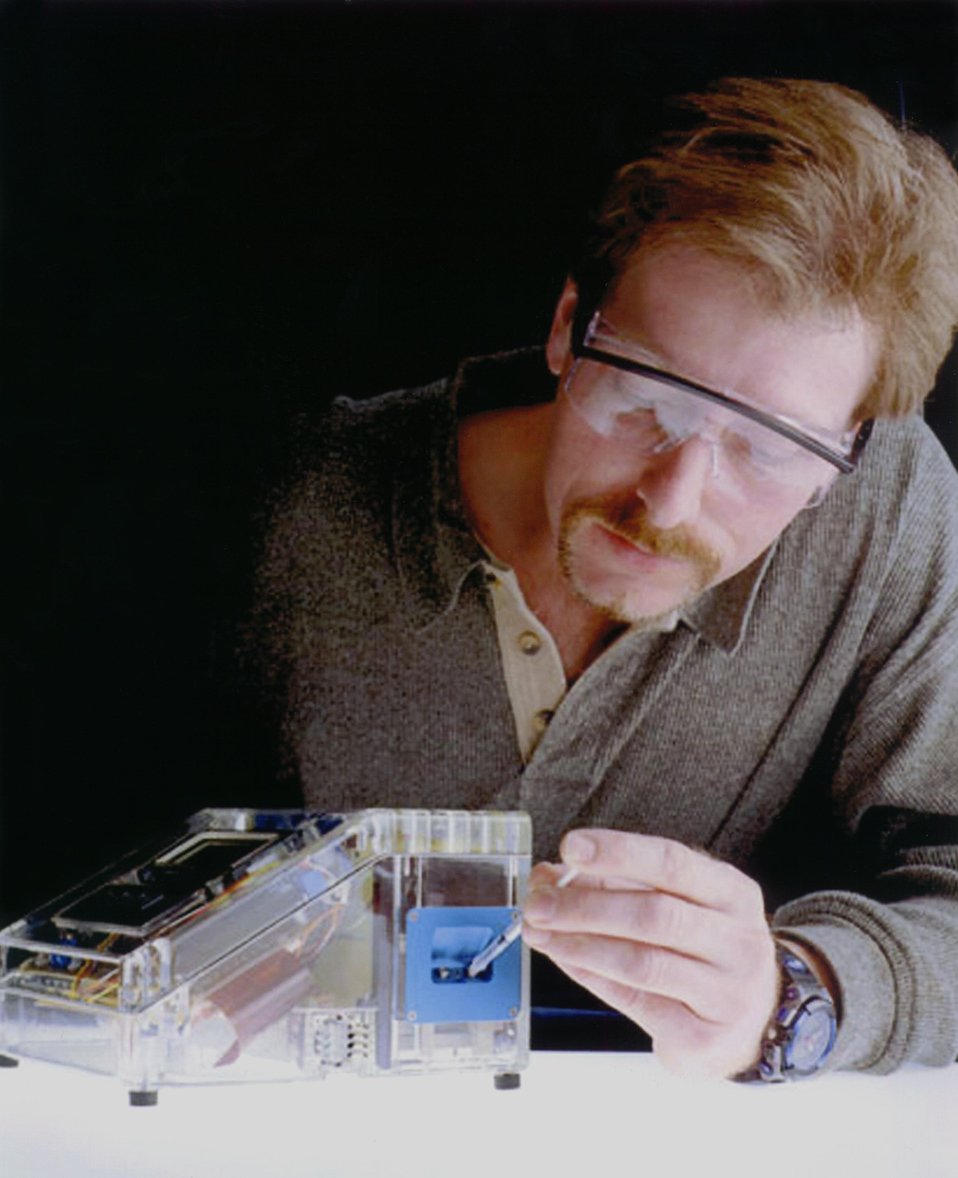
PORTABLE, CHEMICAL ANALYSIS SYSTEM DEVELOPED AT SANDIA NATIONAL LABS.

SCIENTIST FROM SANDIA'S ADVANCED MICROSYSTEMS ENGINEERING DEPARTMENT INSPECTS A PROTOTYPE VERSION OF THE MICROCHEMLAB, A PORTABLE SYSTEM FOR DETECTING A BROAD RANGE OF CHEMICAL AGENTS AND BIO-TOXINS.